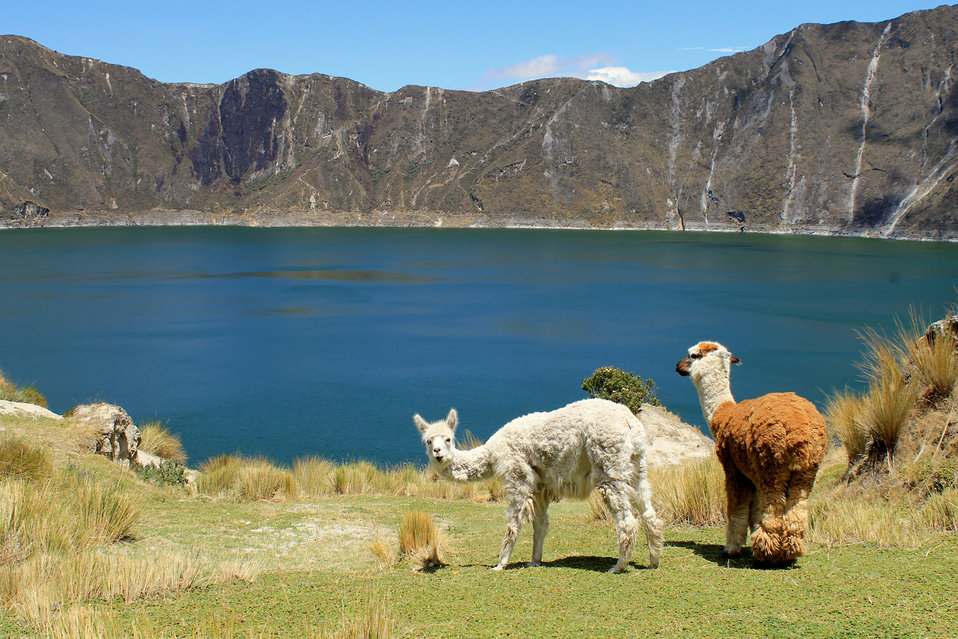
Llama watch

Llamas on the slopes of quilotoa crater, ecuador.